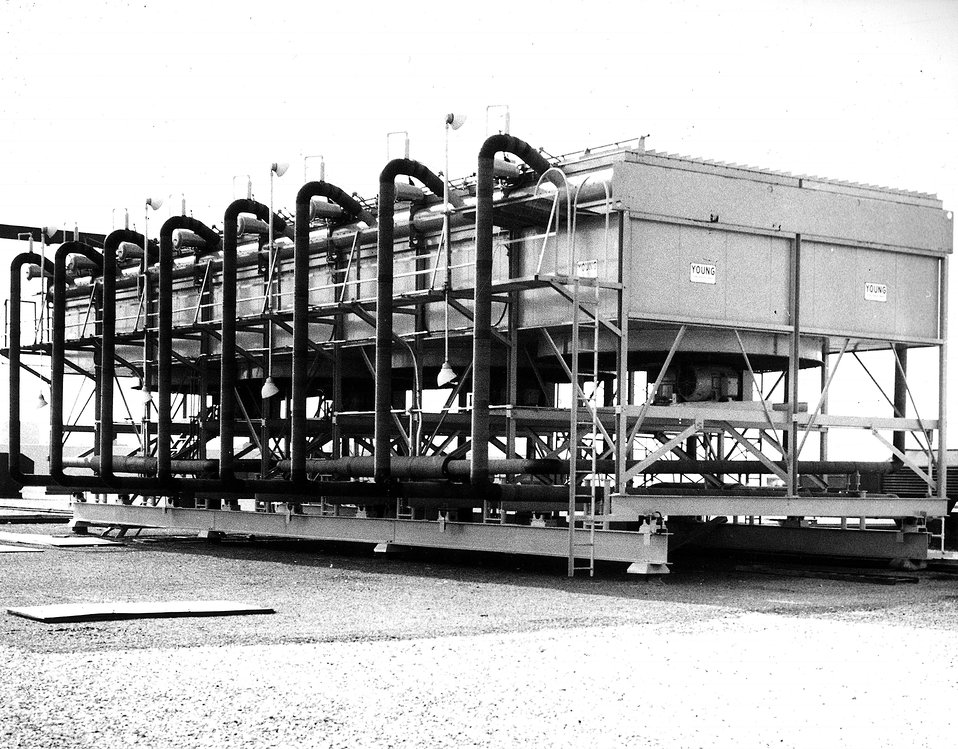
This photo is of a prototype air-cooled condenser now undergoing tests at the Portsmouth (Ohio) Gaseous Diffusion Plant. A potential cost-saver in pollution control, the air-cooled condenser, being developed by Goodyear Atomic Corporation, has an operating cost which is one-tenth of that for existing water-cooled condensers. Circa 1972